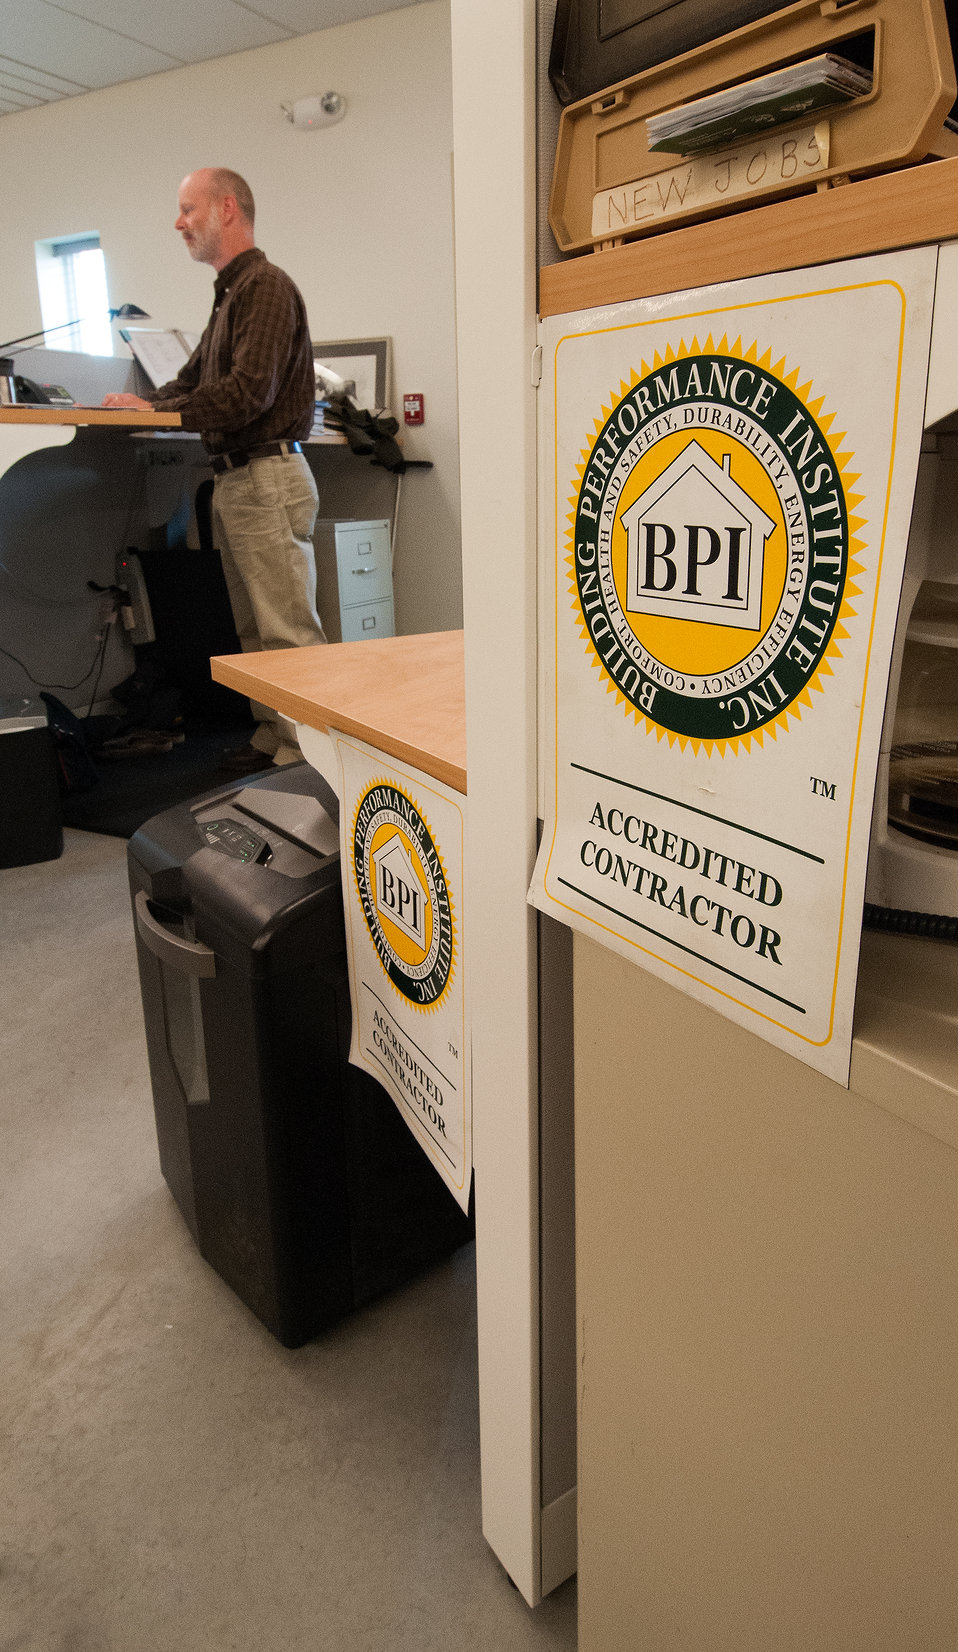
Paul Zabriskie works at Building Performance Institute, which is an accredited contractor co-located in the Central Vermont Community Action Council in Barre, VT. The institute offers a weatherization program for clients homes. The mission of the CVCAC is to create economic security for low to moderate-income residents in rural Central Vermont. Through the assistance of a U.S. Department of Agriculture (USDA) Rural Development (RD) Community Facilities Grant the CVCAC was able to consolidate their services downtown on Sep. 17, 2013.